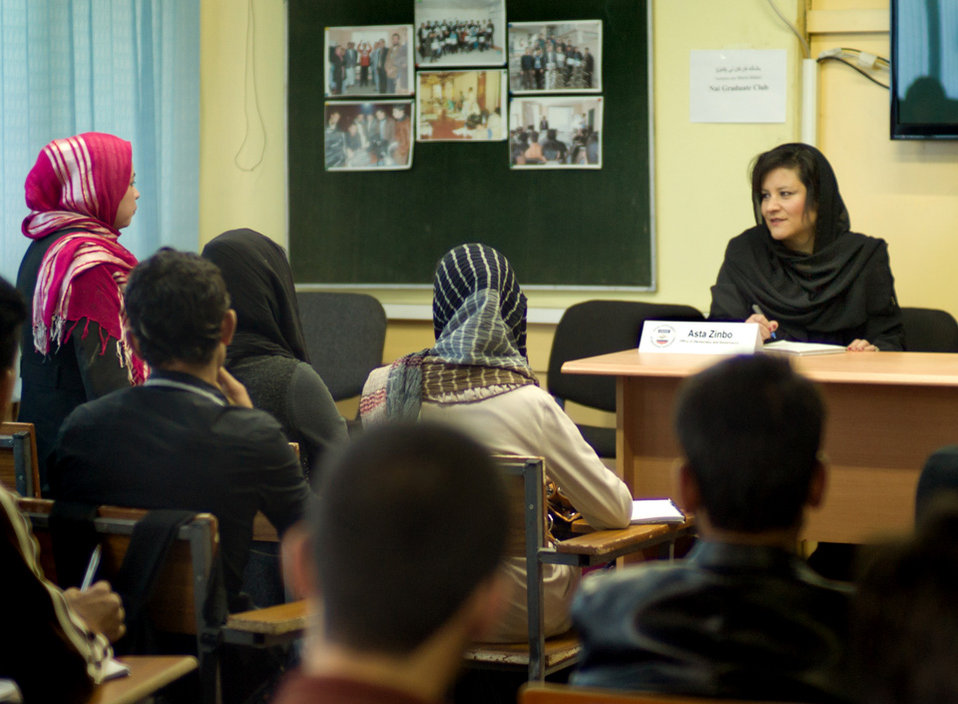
Listening to a female student